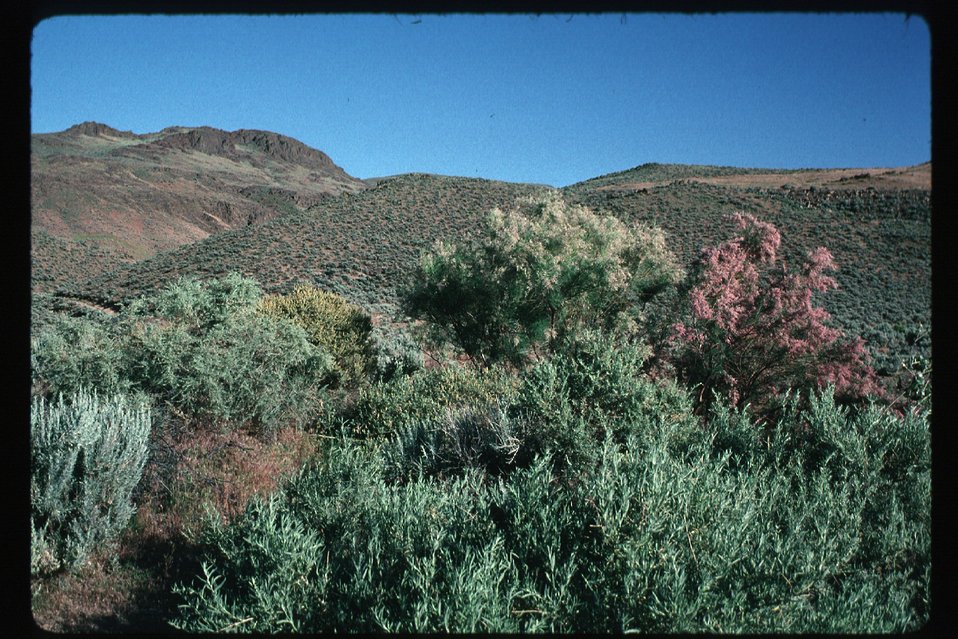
Brush and grass Rangeland Four Rivers Field Office LSRD Lower Snake River District